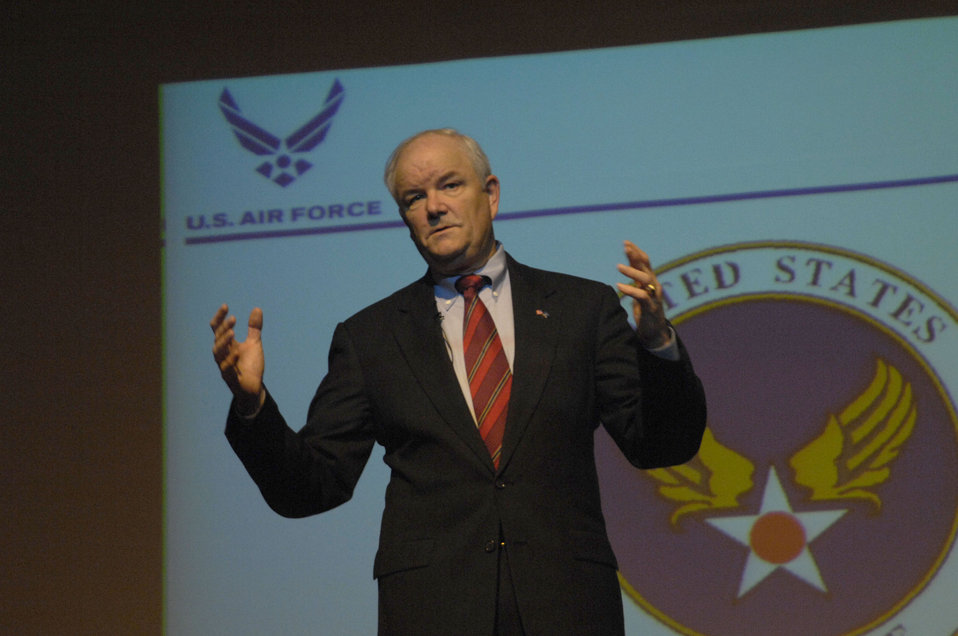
SECAF emphasizes Air Force goals with card

Secretary of the Air Force Michael W. Wynne discussed his